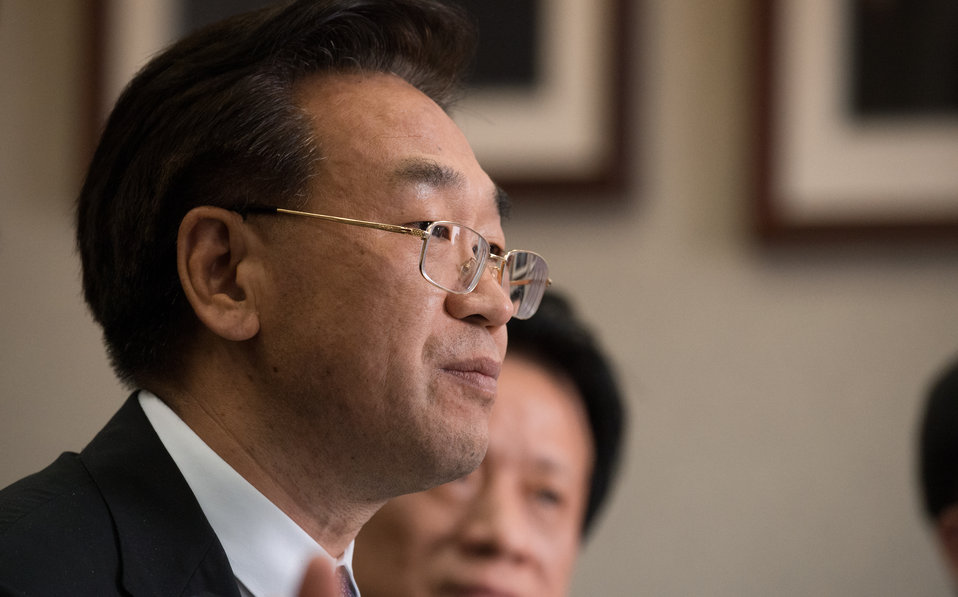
The People’s Republic of China Ministry of Agriculture (MOA) Vice Minister H.E. Zhang Taolin heads the Chinese Agricultural Delegation meeting with U.S. Department of Agriculture (USDA) Under Secretary for Natural Resources and Environment (NRE) Robert Bonnie and other USDA leaders at the USDA headquarters Whitten Building, in Washington, D.C., on Friday June 13, 2014.